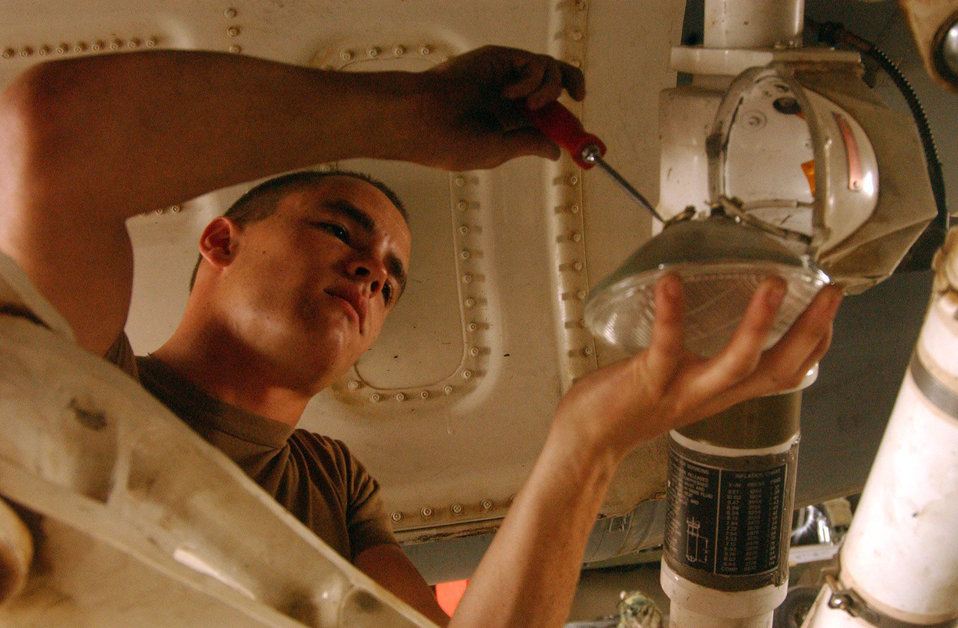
Total Force

BALAD AIR BASE, Iraq -- Senior Airman Jacob Wheeler replaces a burned-out taxi light on an F-16 Fighting Falcon. The 332nd Expeditionary Fighter Squadron includes Air National Guardsmen from Texas, Minnesota and Arkansas as well as active-duty Airmen of the 510th EFS from Aviano Air Base, Italy. Airman Wheeler is a 332nd EFS crew chief who is deployed from the Texas ANG's 147th Fighter Wing.